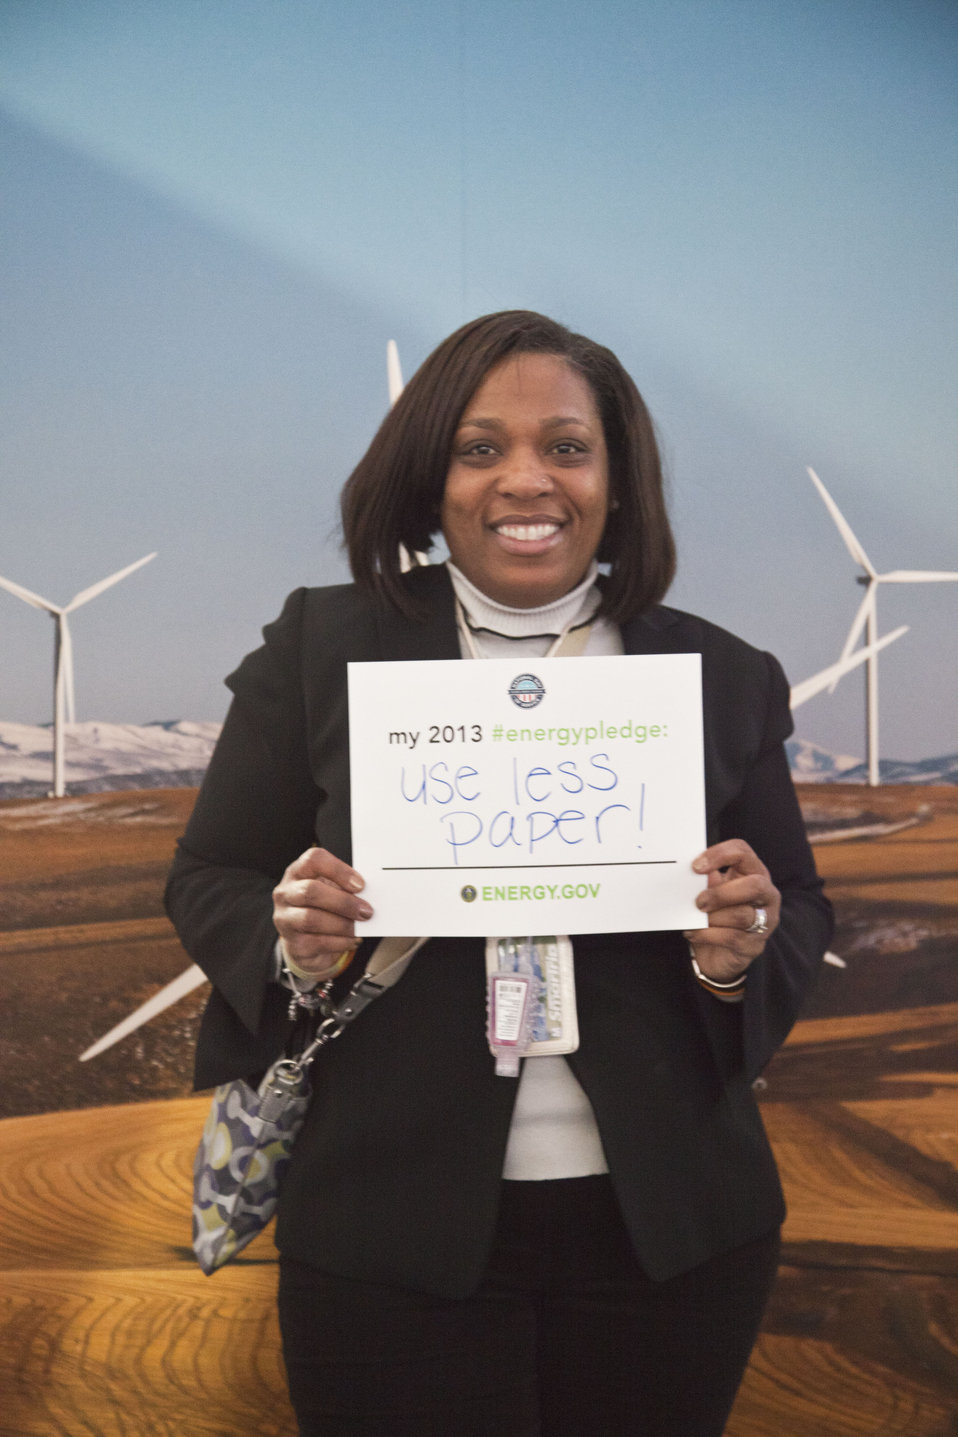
What's your #energypledge?